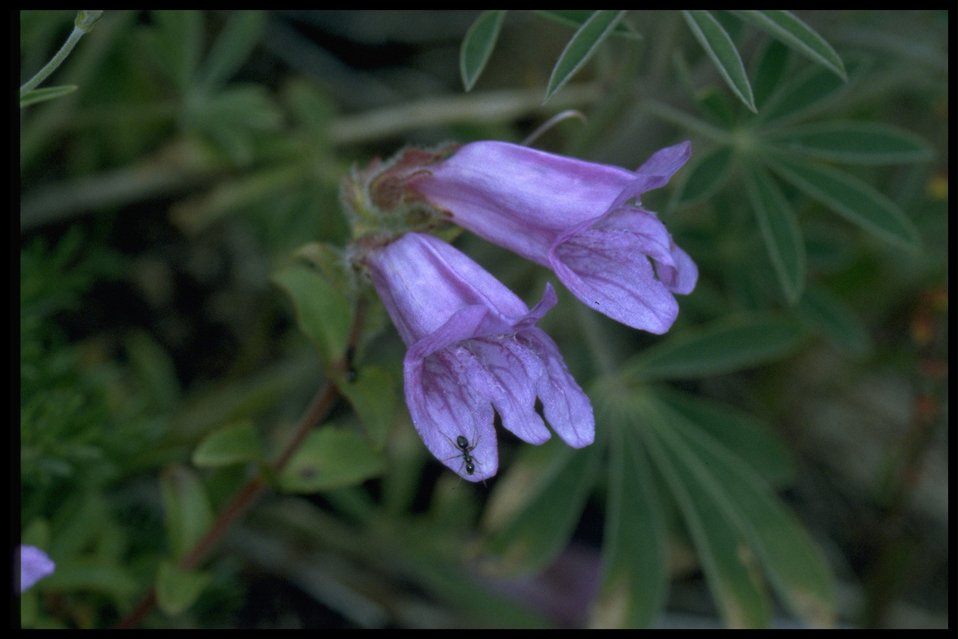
Closeup shot of Penstemon.